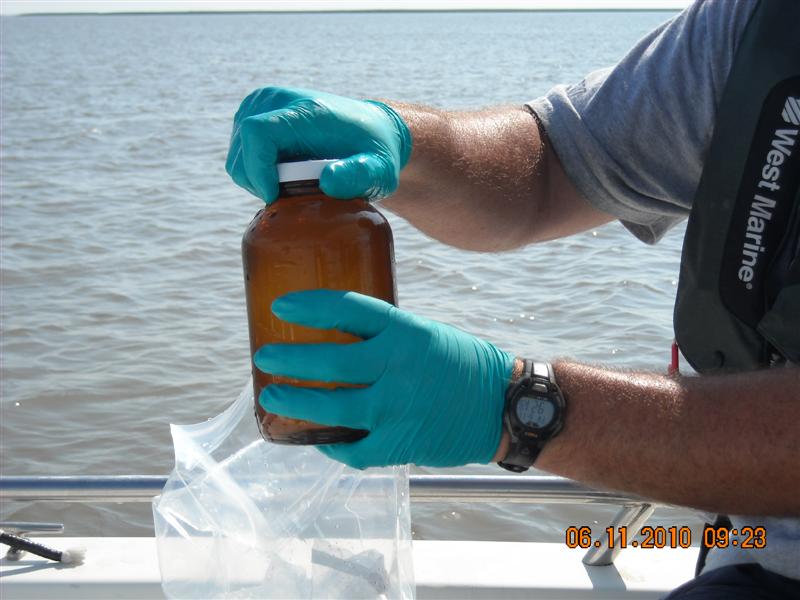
EPA water sampling along the Gulf coast

Water sampling along the Gulf coast